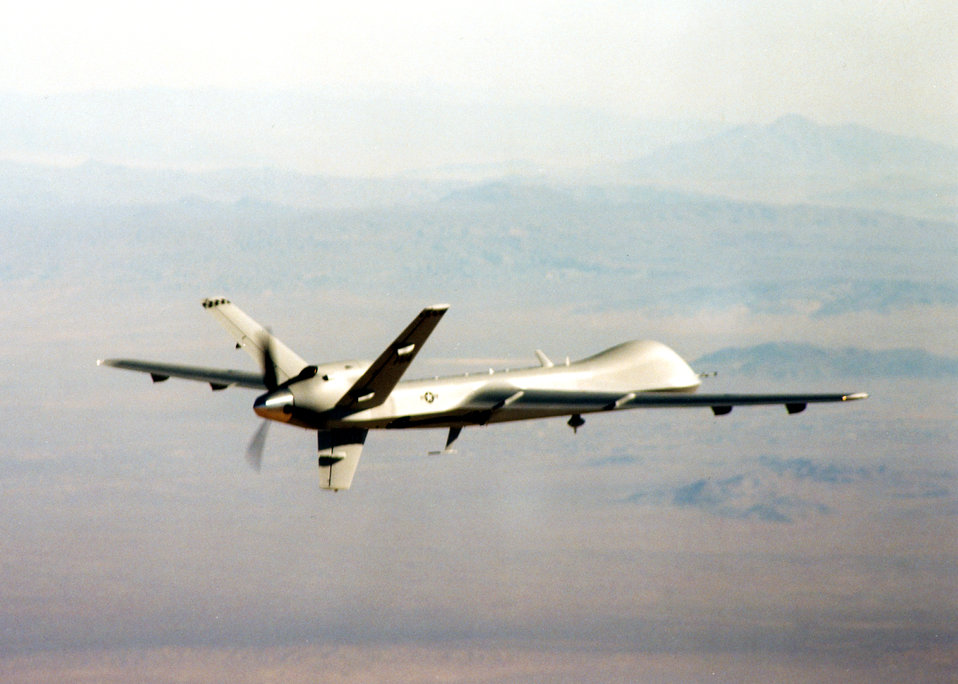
'Reaper' moniker given to MQ-9 unmanned aerial vehicle

The